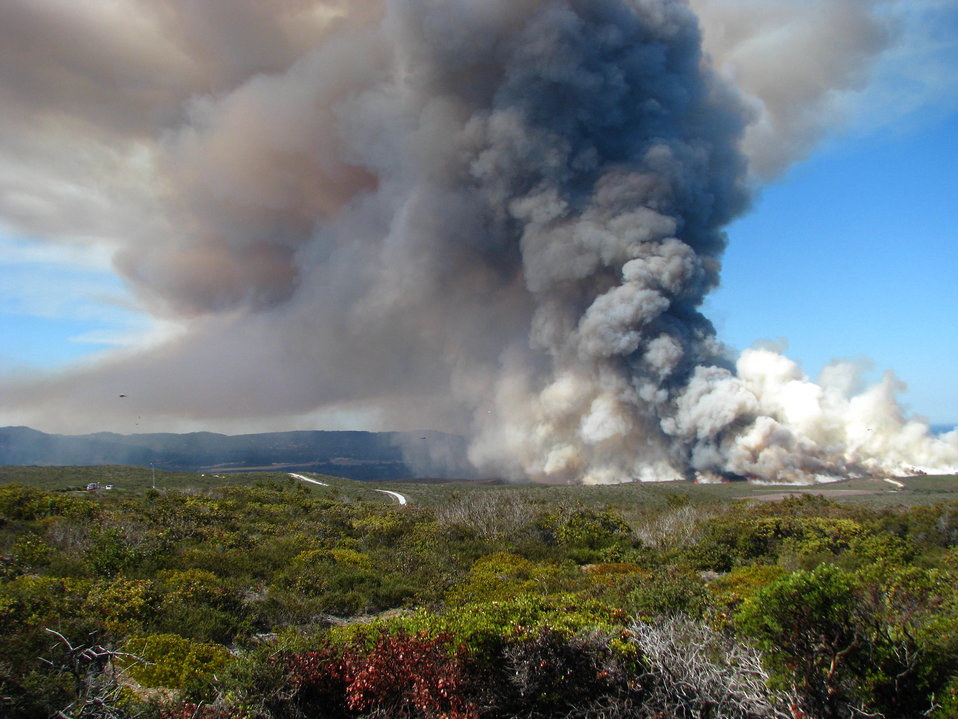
Chaparral clearing at Fort Ord Oct. 15

The U.S. Army Corps of Engineers Sacramento District conducted a controlled burn of central marine chaparral at Fort Ord, Calif., Oct. 15, 2013 to expose unexploded ordnance at the formerly utilized defense site. The burn, carefully coordinated with local agencies, lasted less than two hours and was timed so that prevailing winds would help blow the smoke away from population centers. The controlled burns are part of a comprehensive ordnance removal program at Fort Ord which closed in 1994 under recommendation from the Base Realignment and Closure Commission.